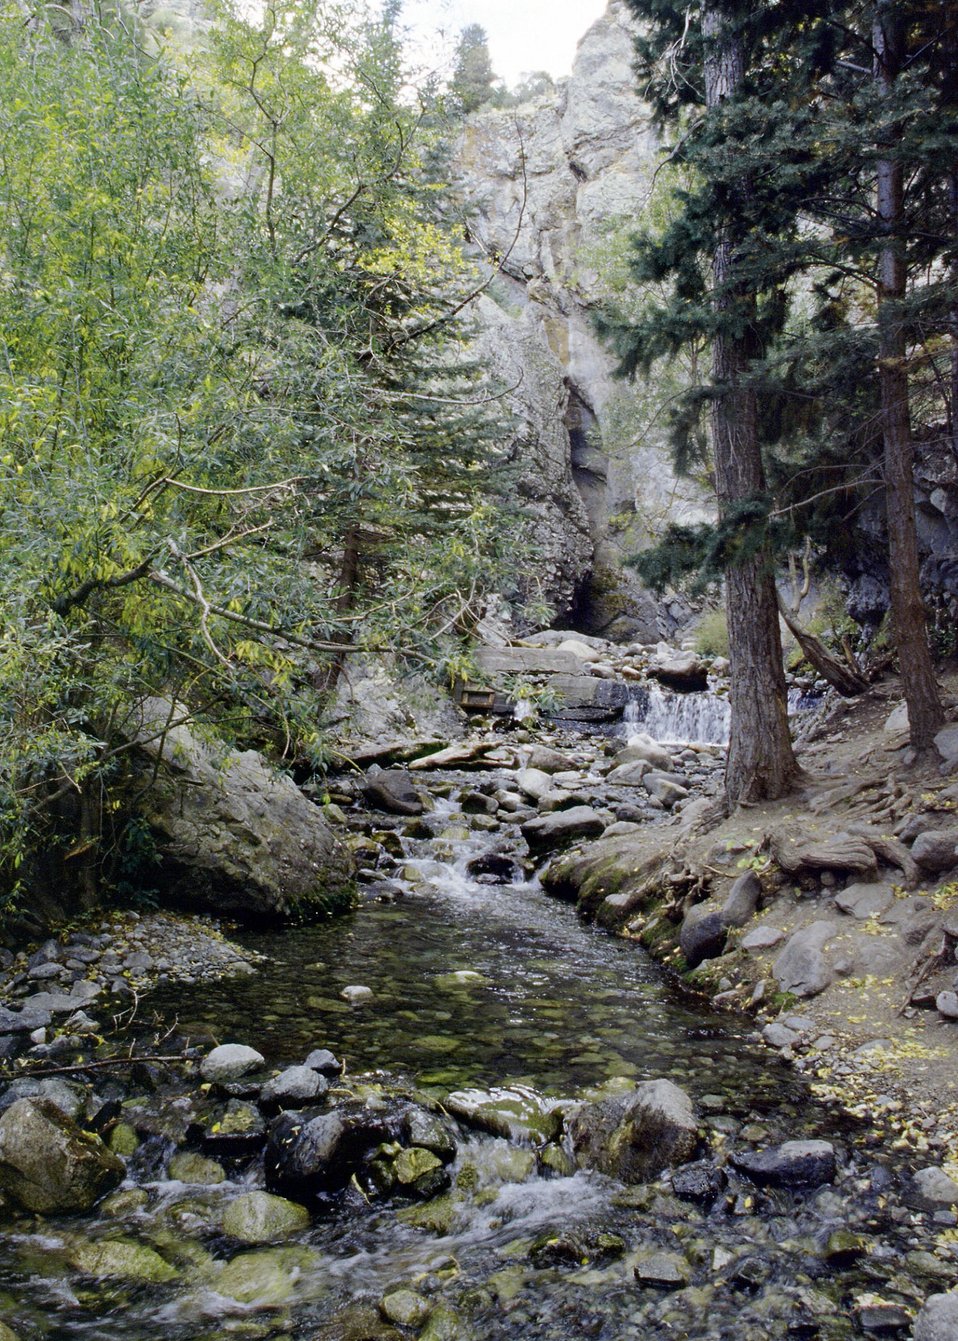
San Luis Creek & Trees